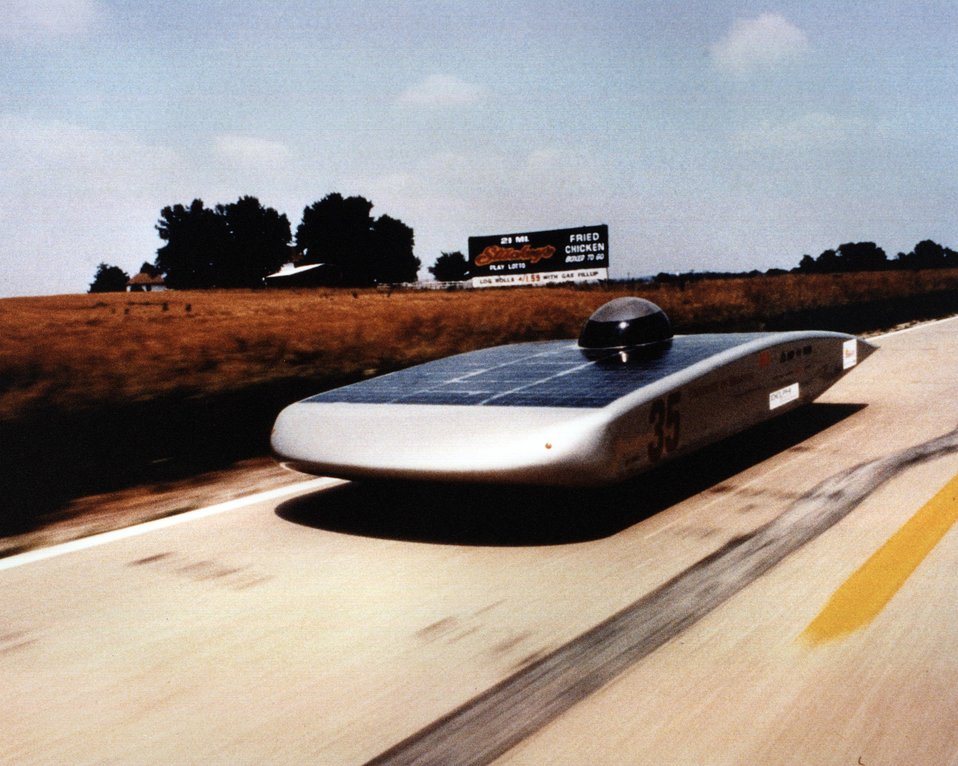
UNIVERSITY OF MINNESOTA'S 'AURORA II' CAME IN SECOND IN THE SUNRAYCE '95. (JUNE 1995)